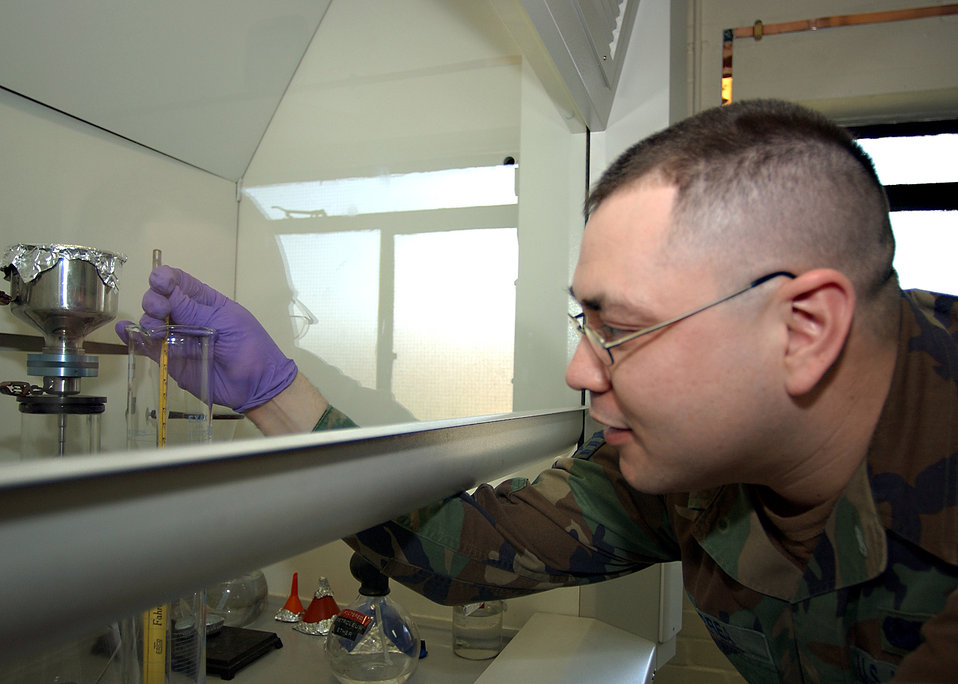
Accurate reading

ROYAL AIR FORCE LAKENHEATH, England -- Senior Airman Benjamin Correa performs a gravity test to measure fuel density. He is a fuels lab technician with the 48th Logistics Readiness Squadron here.